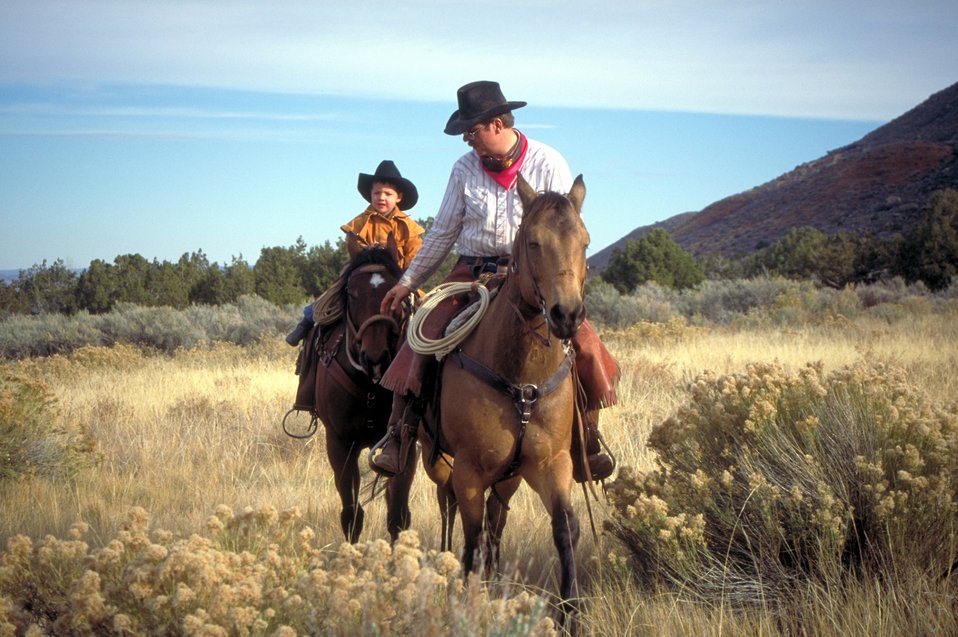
Working cowboys living near Vernal, Utah.